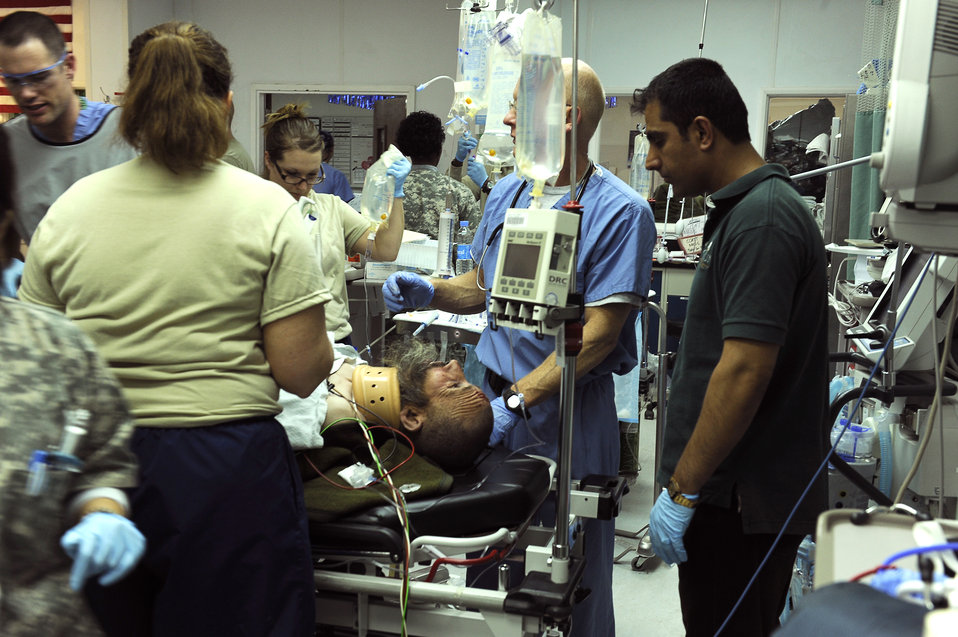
Afghan avalanches

Airmen from the 455th Expeditionary Medical Group work in the emergency room to save avalanche victims who were medically evacuated Feb. 9, 2010, to Craig Joint Theater Hospital at Bagram Airfield, Afghanistan. Dozens of Afghans were taken to Bagram Airfield after avalanches struck a mountain pass in the Parwan Province.